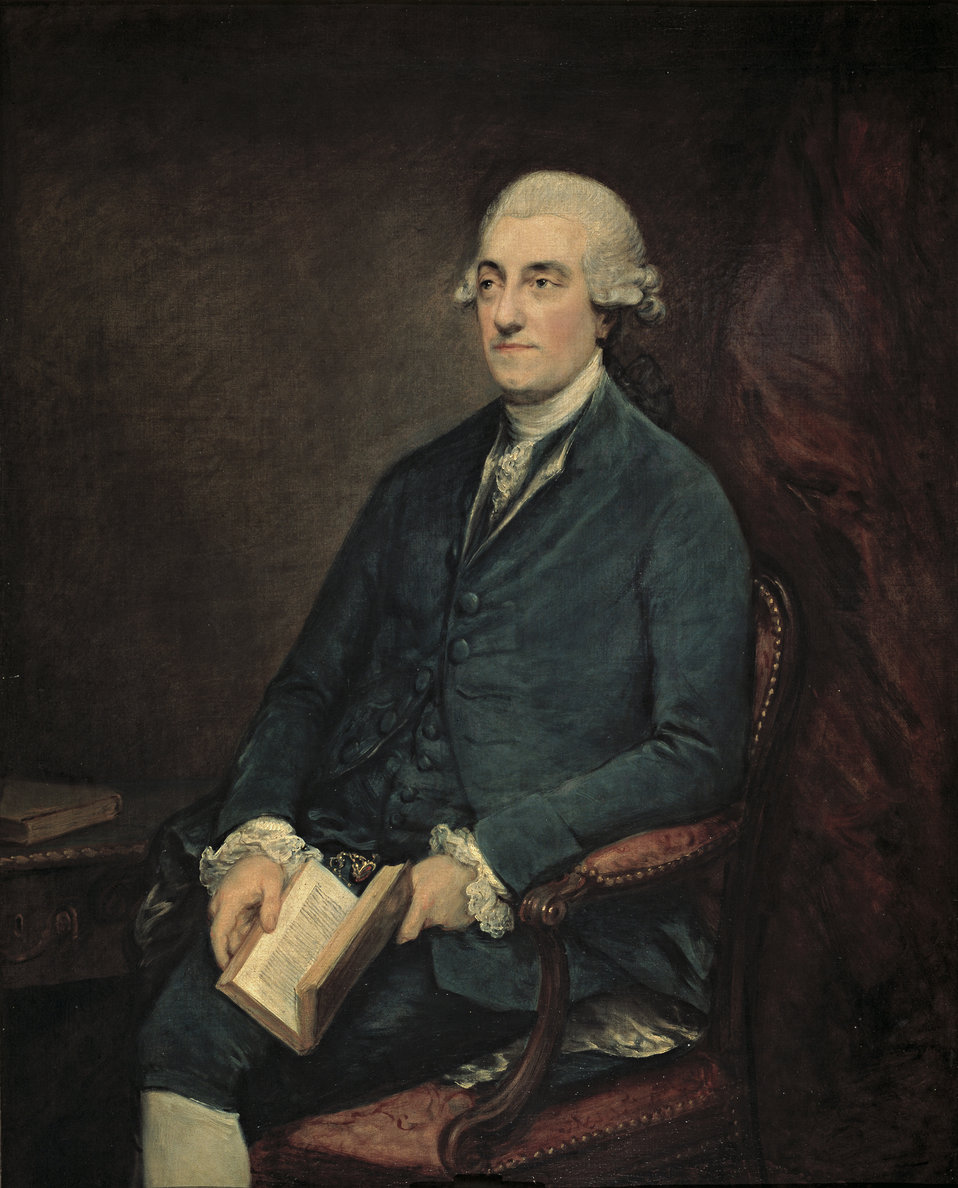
Isaac Henrique Sequeira (Gainsborough)